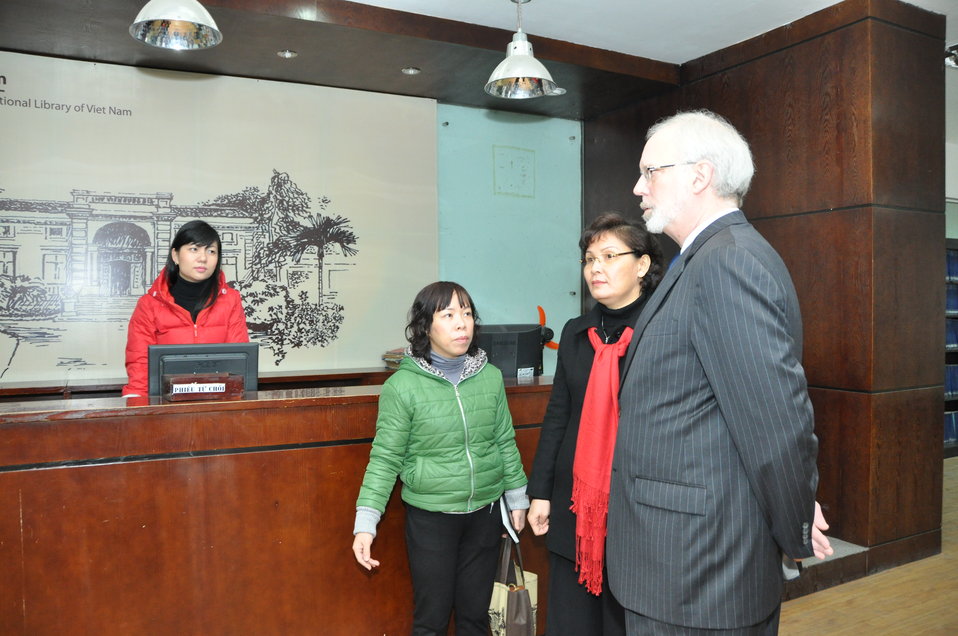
U.S. Ambassador David Shear visits the National Library

Safe Medicine Exhibition